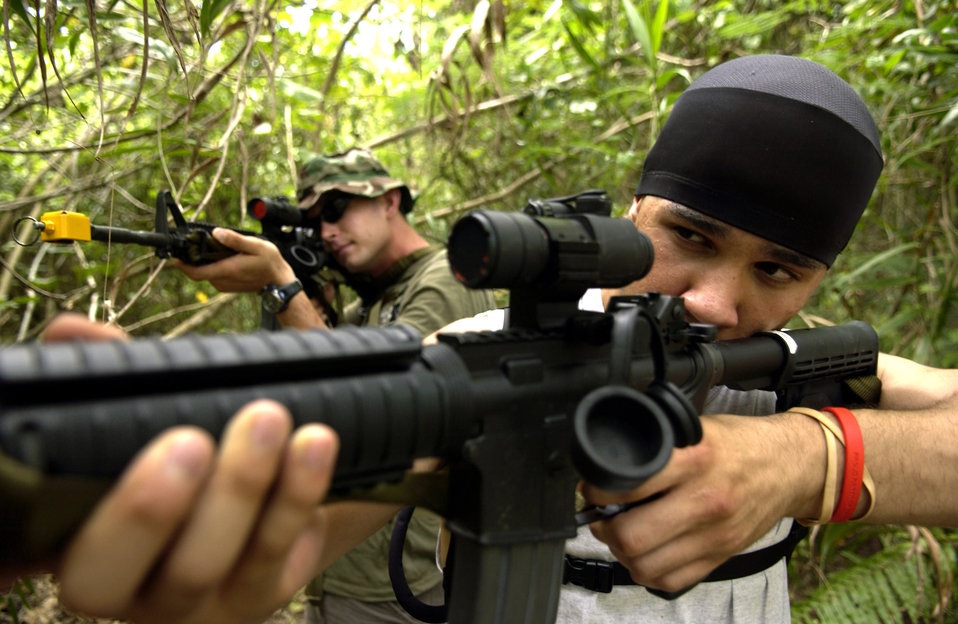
Steady as she goes

Senior Airman Victor DeJesus (foreground) along with Airman 1st Class James Blackwell participate in a field training exercise June 19 at Andersen Air Force Base, Guam. The week-long exercise is being held to exercise the deployment process.